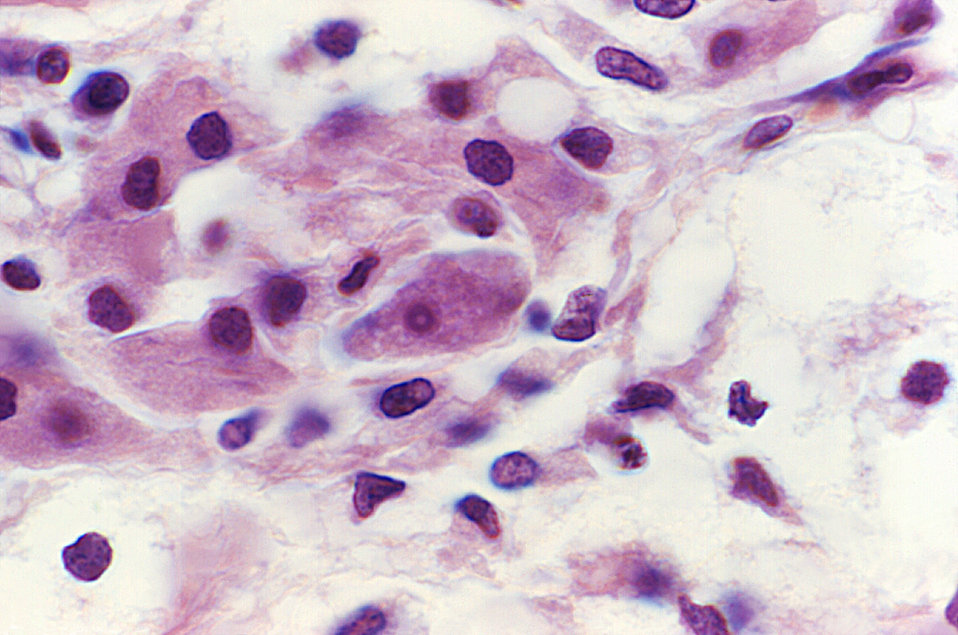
Magnified 1000X, this photomicrograph revealed the presence of Acanthamoeba sp. parasitic microorganisms, which were found in a specimen of human H&E-stained adrenal gland tissue.